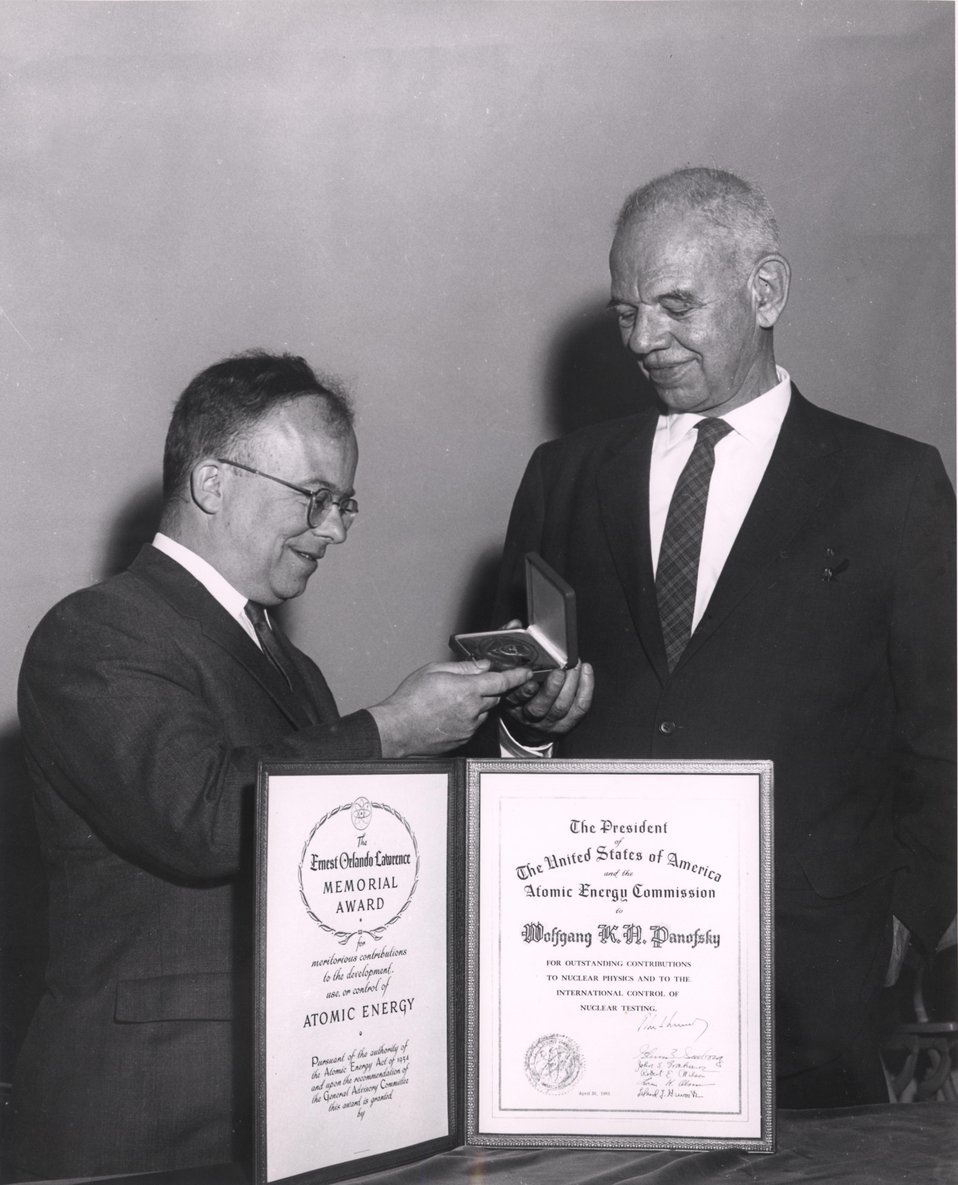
Lawrence Award Ceremony, 1961.